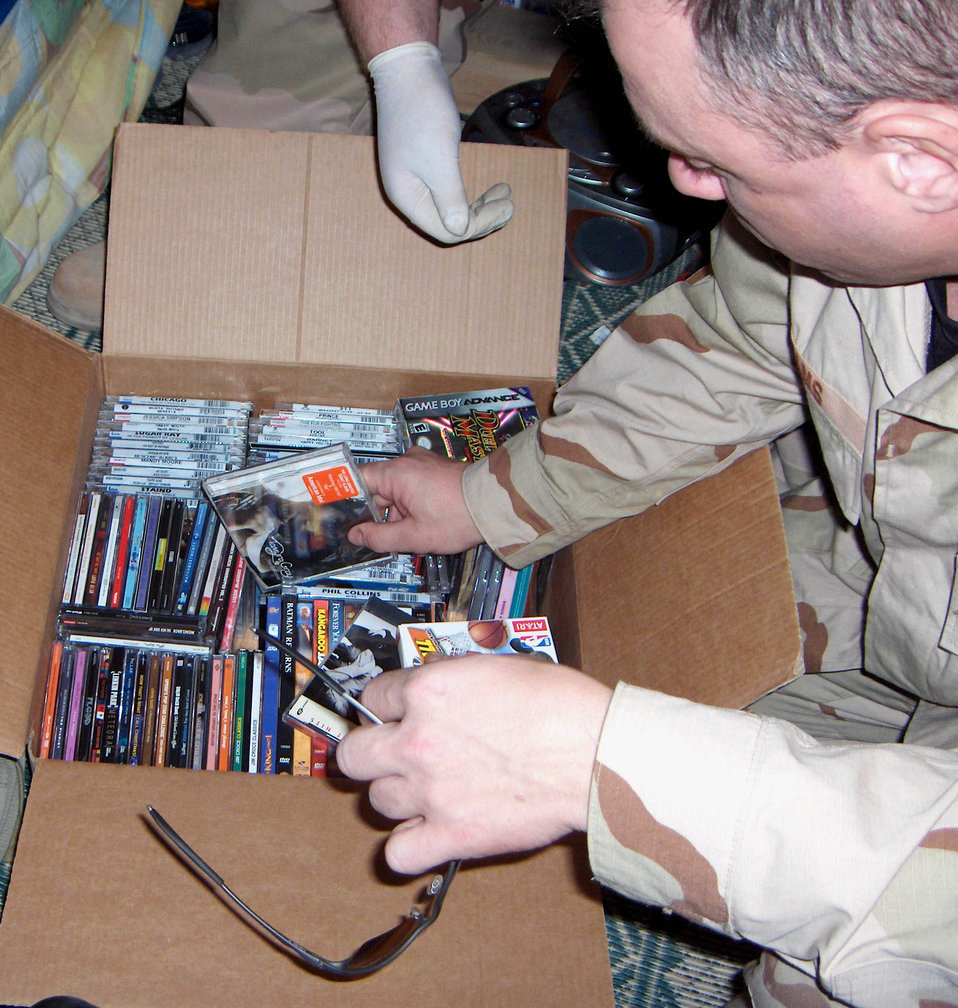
Surprise inspection nets weapons, alcohol, merchandise

KIRKUK AIR BASE, Iraq -- An Airman here goes through a box of stolen CDs and DVDs that was recovered during a surprise inspection of areas inhabited by third-country workers and American contractors. The operation successfully broke up an AAFES theft ring.